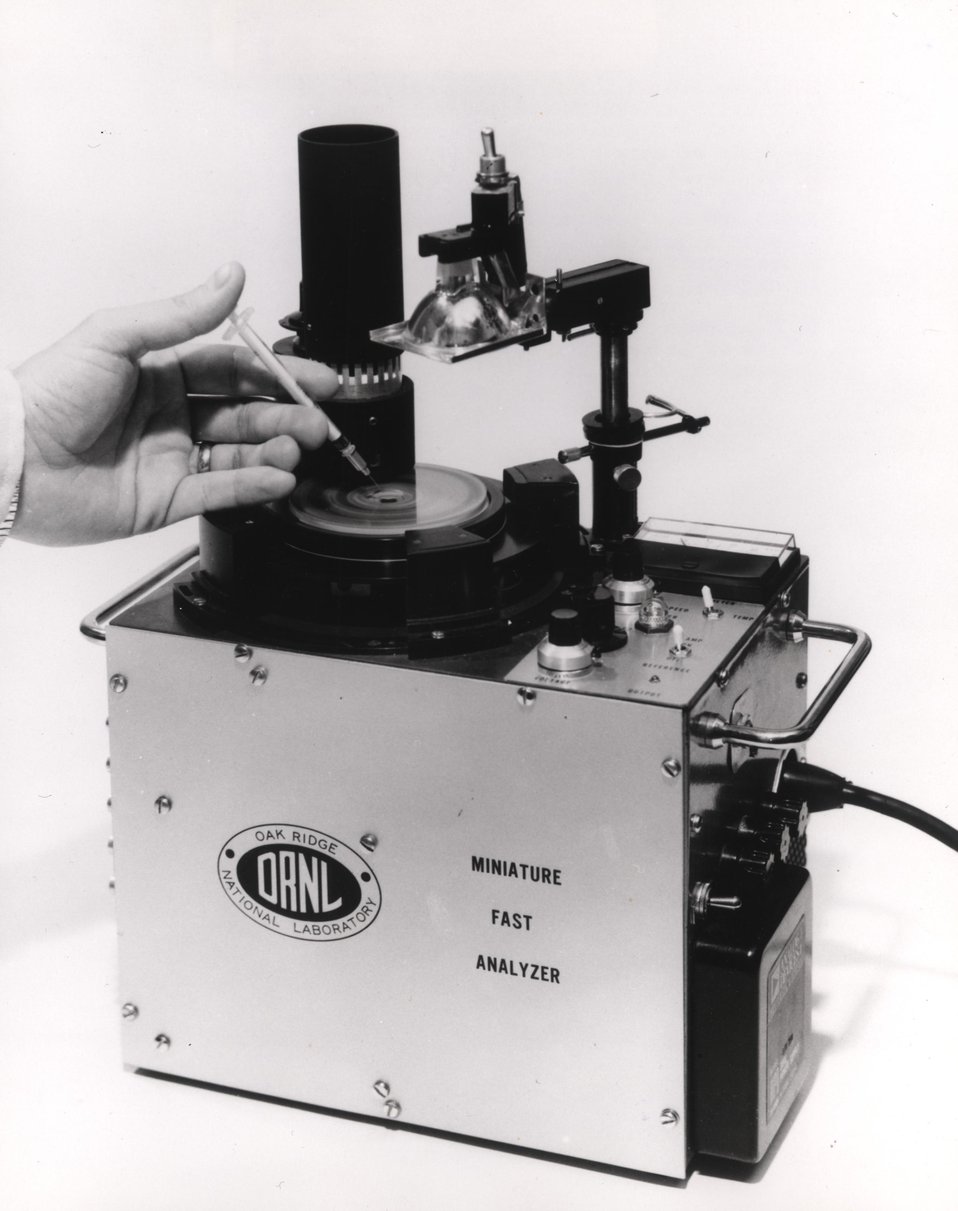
A miniature centrifugal fast analyzer system under development at AEC's Oak Ridge National Laboratory for the analysis of many clinically important biochemicals in blood has been developed. c. 1973